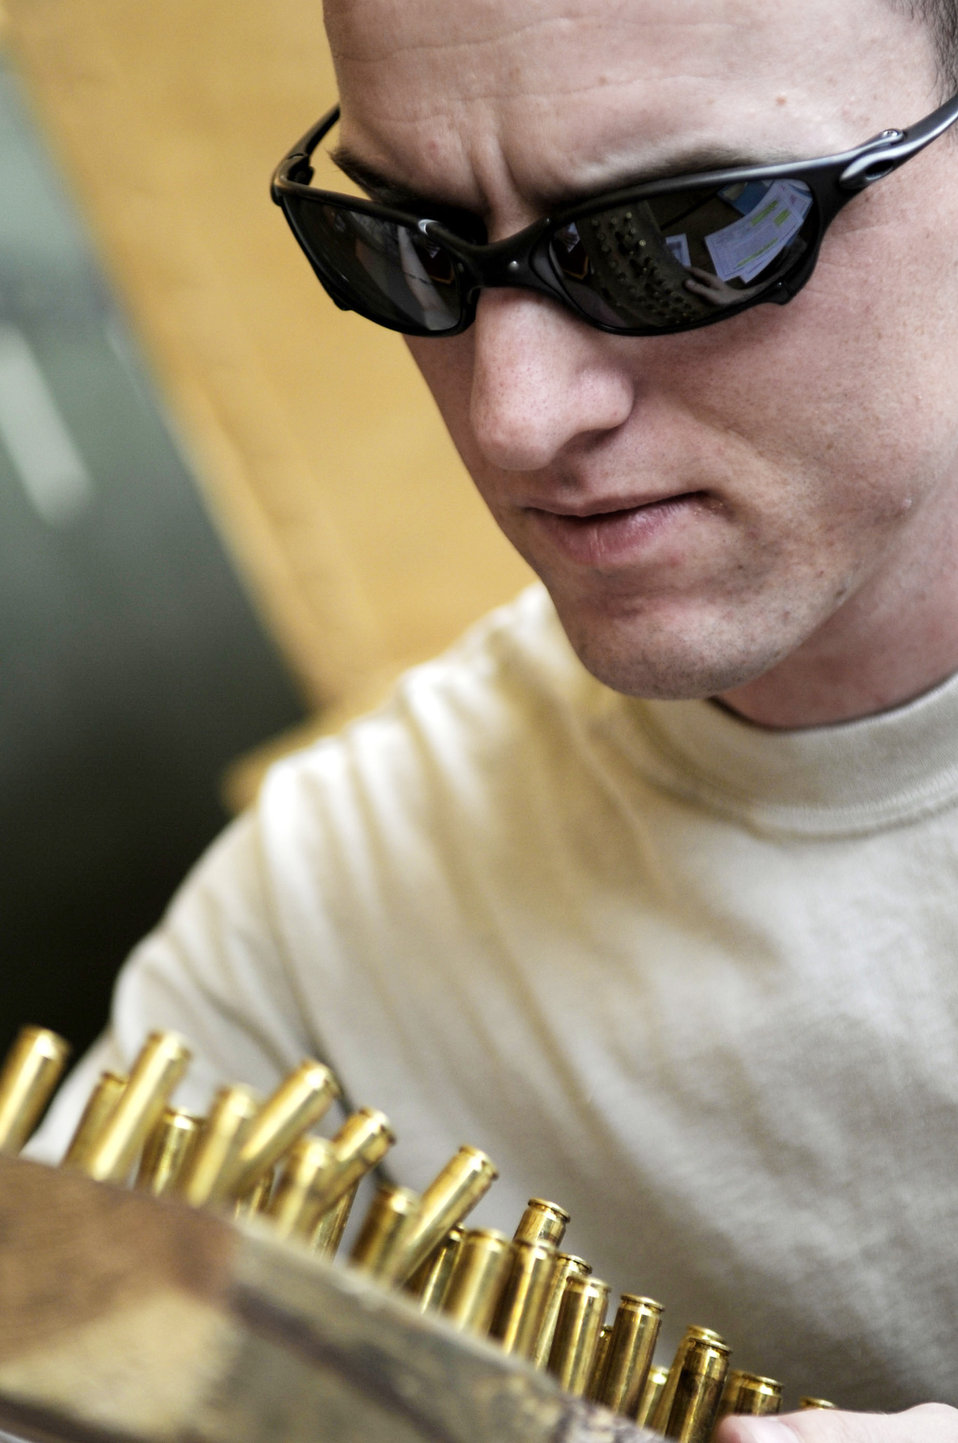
Combat arms teams support all operations

Senior Airman Jacob Spencer confirms the lot number on ammunition turned in by a member of the 451st Expeditionary Aircraft Maintenance Squadron during a visit to the unit April 16, 2010, at Kandahar Airfield, Afghanistan. Airman Spencer is a combat arms training and maintenance journeyman assigned to the 451st Expeditionary Security Forces Squadron.